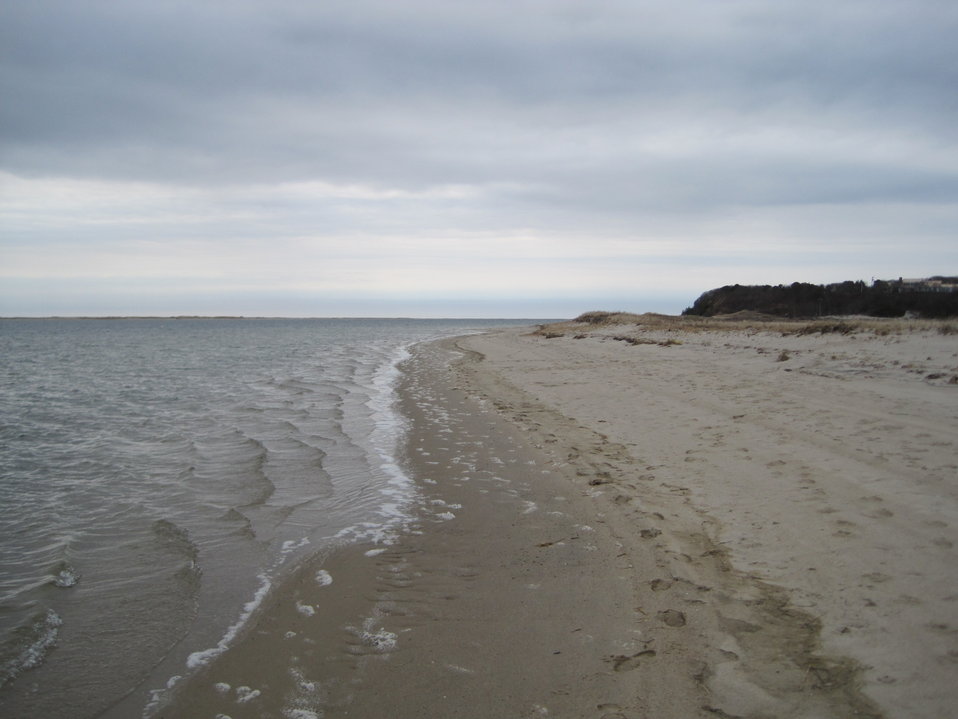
Shoreline at Monomoy

The waves hit the beach on a chilly March morning.

Credit: Keith Shannon/USFWS

Monomoy National Wildlife Refuge is part of the Eastern Massachusetts National Wildlife Refuge Complex.